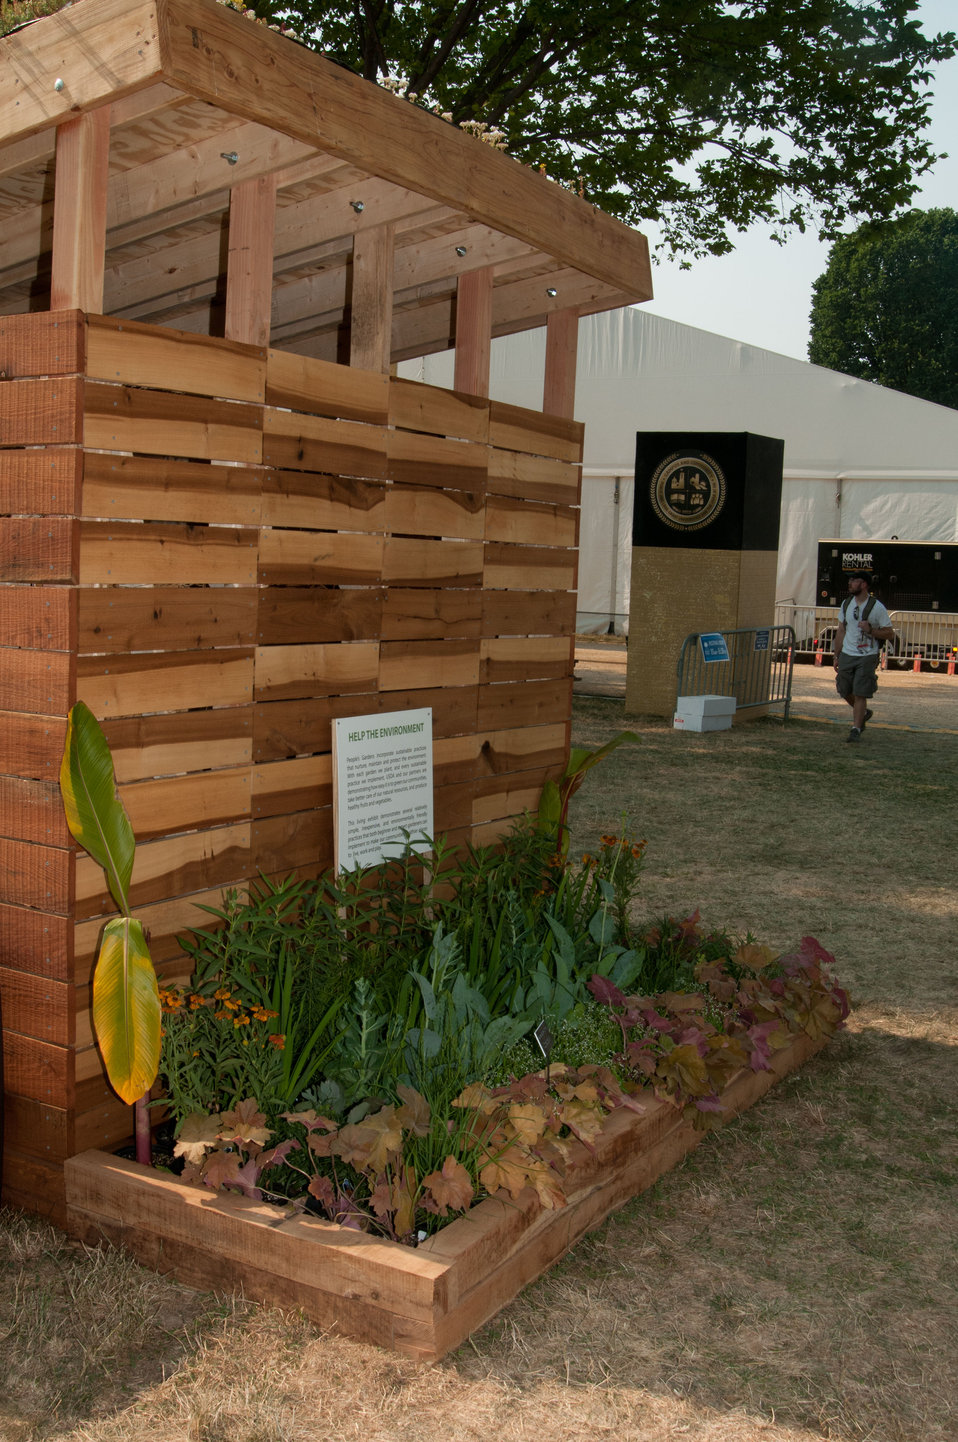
U.S. Department of Agriculture (USDA), People’s Garden Initiative, Green Roof Shed at the 2012 Smithsonian Folklife Festival, on the National Mall in Washington, D.C., on Thursday, June 28, 2012. The siding on this shed is made of recycled lumber from trees that came down in storms. Green roofs are attractive, practical benefits include additional thermal protection, noise reduction and increase the life expectancy of the roof. U.S. Department of Agriculture (USDA) partnered with the University of the District of Columbia’s (UDC), Department of Agriculture and Urban Design on the design and construction of this shed. UDC is a Land Grant university. For more information and answers to questions such as how do you build a roof to accommodate a green roof? And is it possible to modify an already built roof to add a green roof? Go to blogs.usda.gov/2012/07/05/going-green-green-roofs-and-rai... One of the three themes this year is “Campus and Community.” It celebrates the 150 years of the USDA and the Land-Grant University System. The U.S. Department of Agriculture (USDA) and the Land-Grant system extend education across the country, contributing to American agriculture success and rural prosperity. “Campus and Community” has demonstrations, discussions, hands-on activities, and entertainment to that showcase the many ways that this partnership works to improve American agriculture and rural life.